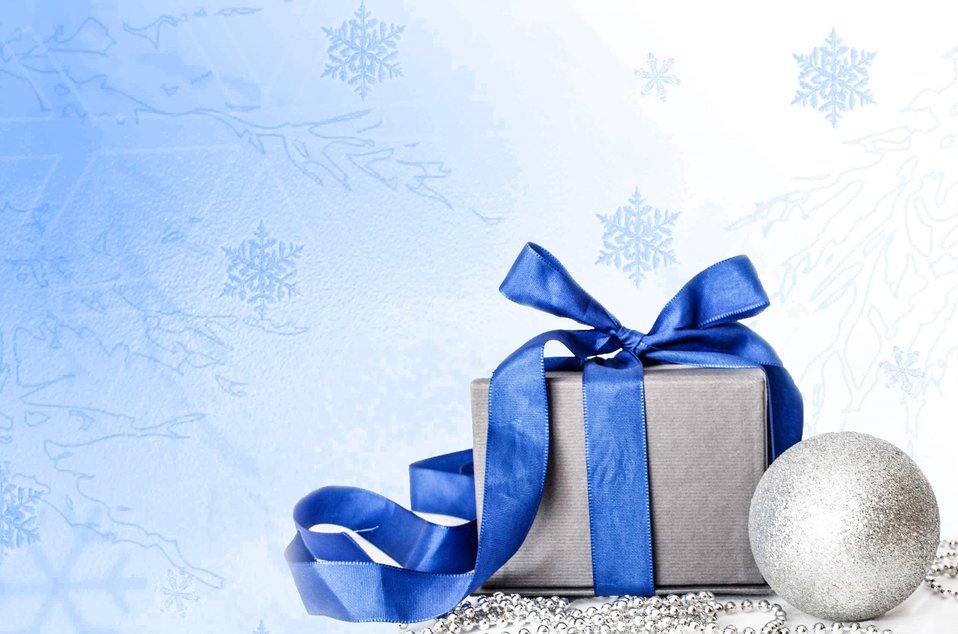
Christmas background.